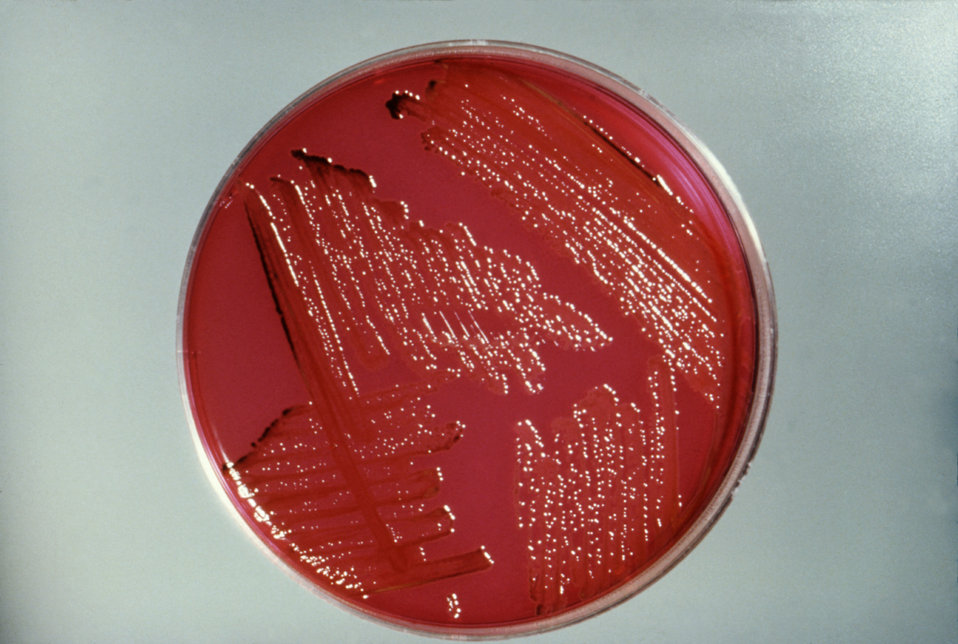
This photograph depicts the colonial growth pattern displayed by the isolated Gram-negative bacteria Citrobacter freundii on a Xylose Lysine Sodium Deoxycholate (XLD) agar plate.